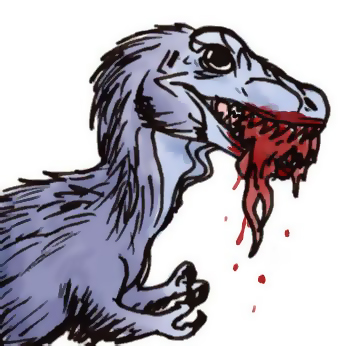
Tyrannosaur baby covered with down feathers.